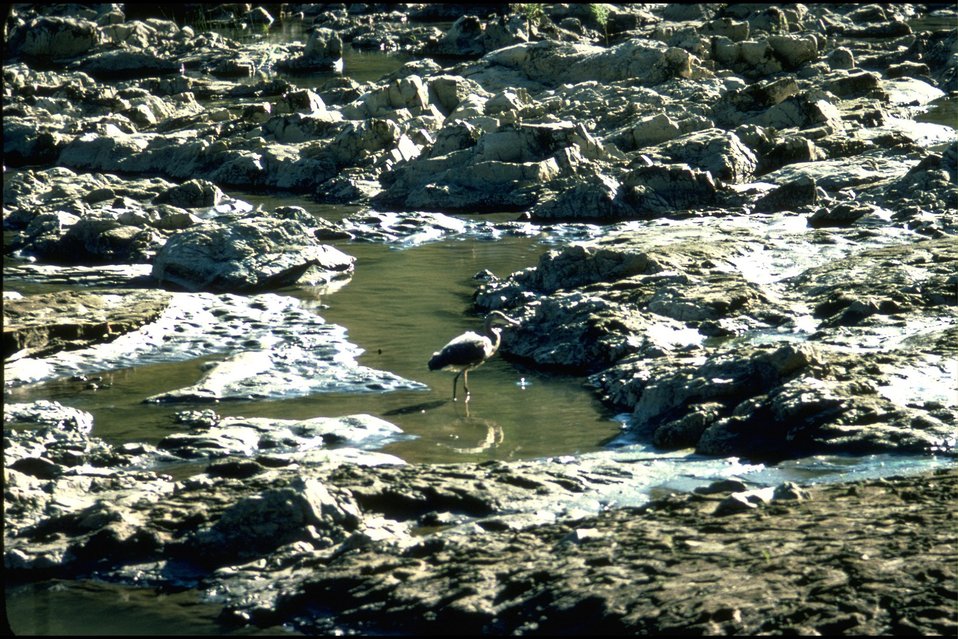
Rogue River - Great Blue Heron standing in a puddle.